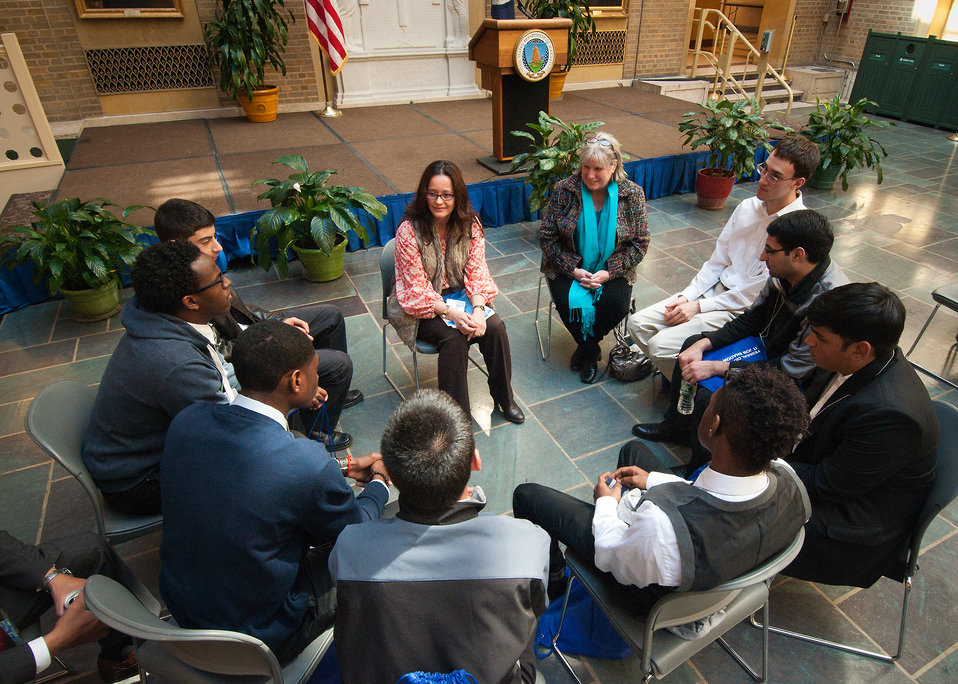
U.S. Department of Agriculture (USDA) Office of Human Resources Management (OHRM) Wendy Carrasco explains the student employment programs to students from Edison Academy in Fairfax, VA during the annual U.S. Department of Agriculture’s (USDA) Information Technology (IT) Job Shadow Day held by the USDA Office of the Chief Information Officer (OCIO) to introduce local high school students to careers in information technology in Washington, D.C. on Tuesday, Apr. 2, 2013.